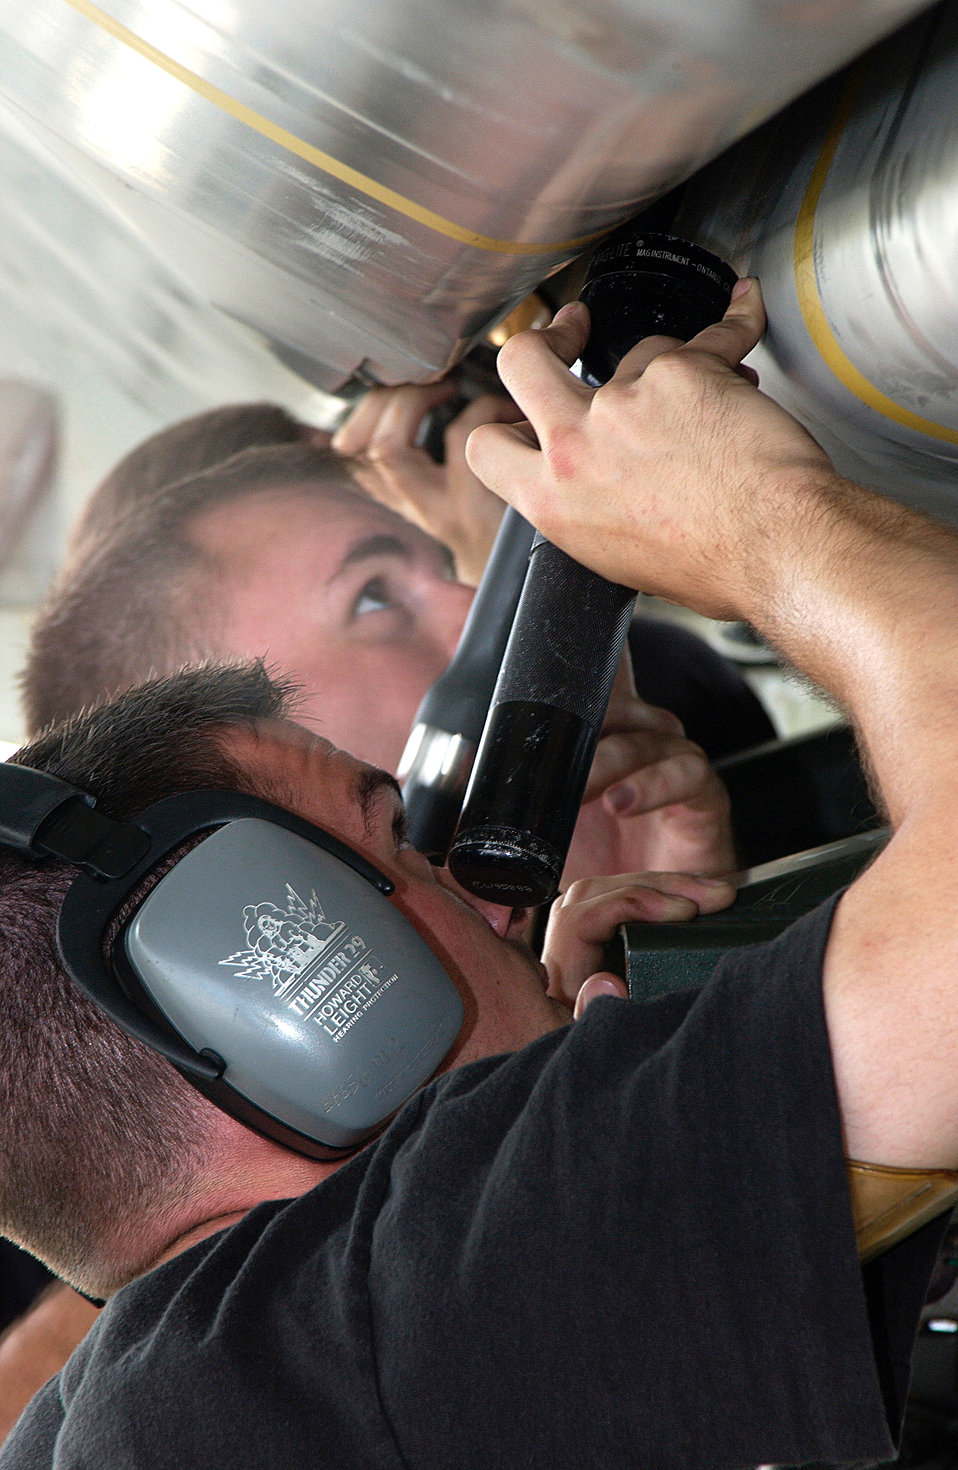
Cruise missile

ANDERSEN AIR FORCE BASE, Guam -- B-52 Stratofortress weapons troops load an air-launched cruise missle on a B-52 Stratofortress here. Aircraft and support people from the 2nd Bomb Wing at Barksdale Air Force Base, La., are deployed as part of the 7th Air Expeditionary Wing.